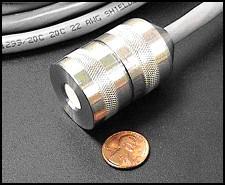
AN ADVANCED SENSOR BEING TESTED AT THE NEVADA TEST SITE.

ADVANCED SENSORS LIKE THE ONE PICTURED AT LEFT, COME IN WIDE VARIETY OF SIZES, FROM SIX FOOT CYLINDERS TO MILLIMETERS IN LENGHT. THESE SENSORS TESTED AT NTS ARE USED TO MONITOR VARIOUS ENVIRONMENTAL CONDITIONS, SUCH AS TEMPERATURE, PH LEVELS, AND CONTAMINANTS, BOTH RADIOLOGICAL AND CHEMICAL.